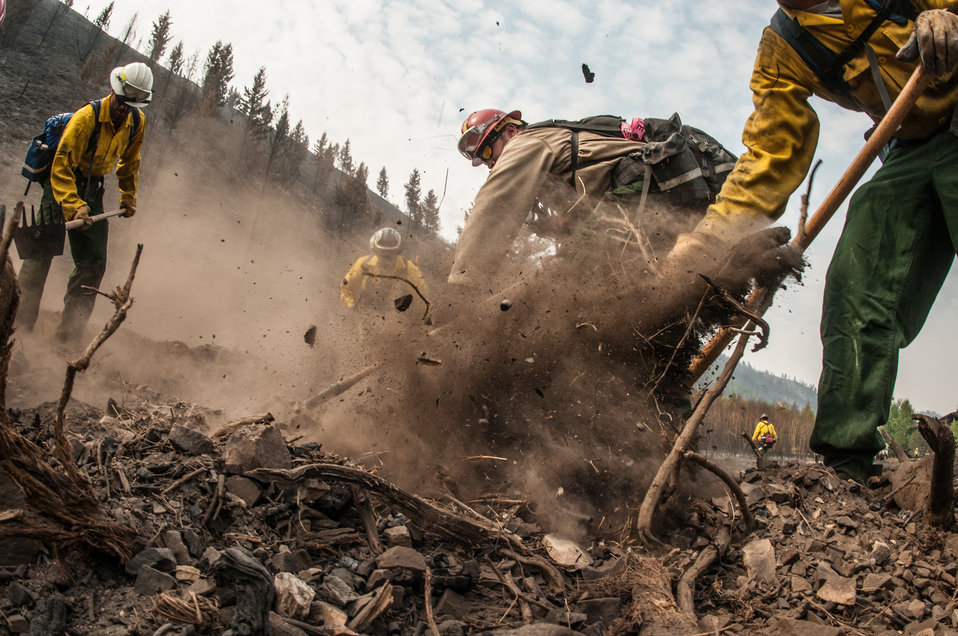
Southern Plains and Comanche Type 2 Initial Attack Crews and an Engine Crew work together to extinguish underground smoldering fires in roots or buried tree limbs, using a variety of hand tools and fire suppressing foam, during the Beaver Creek Fire, west of Hailey, ID, on Wednesday, Aug 21, 2013.